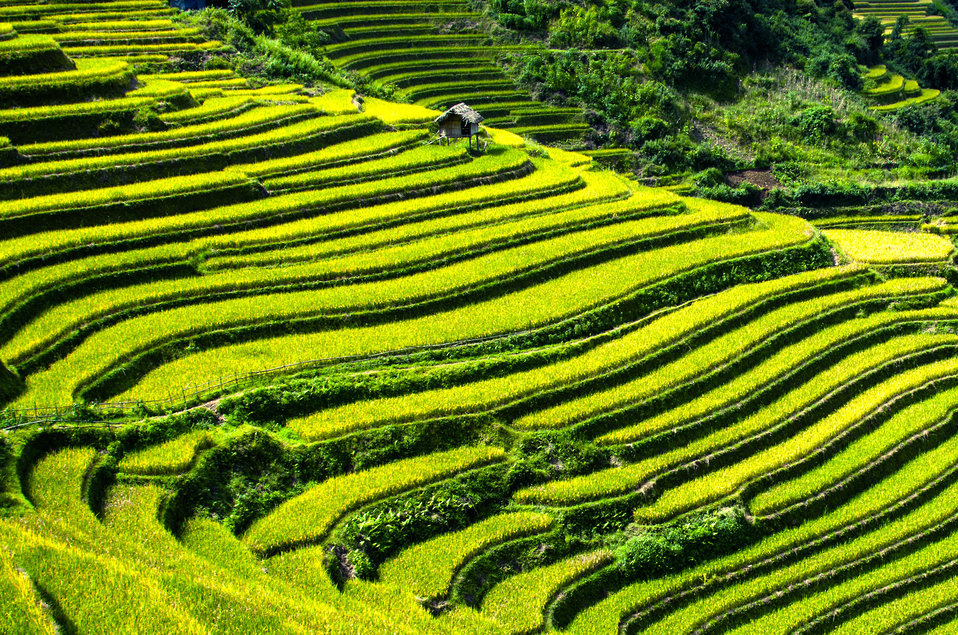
The season #1

Terraced fields in mu cang chai district, yen bai, vietnam's northwest.